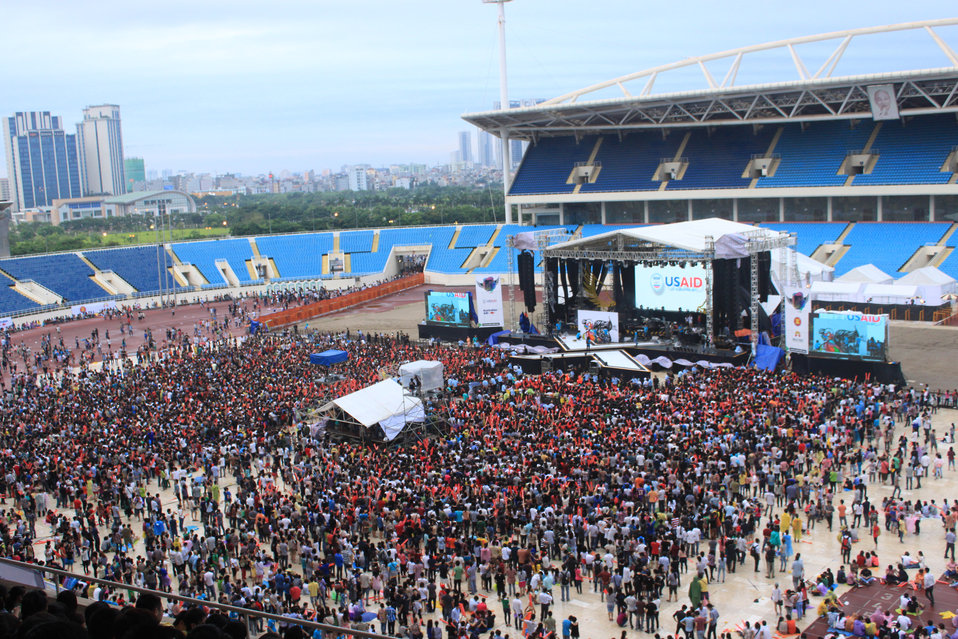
Fans keep on filling in My Dinh Stadium for MTV EXIT concert

A great concert that attracts 40,000 fans in My Dinh Stadium in Hanoi with strong messages against human trafficking.